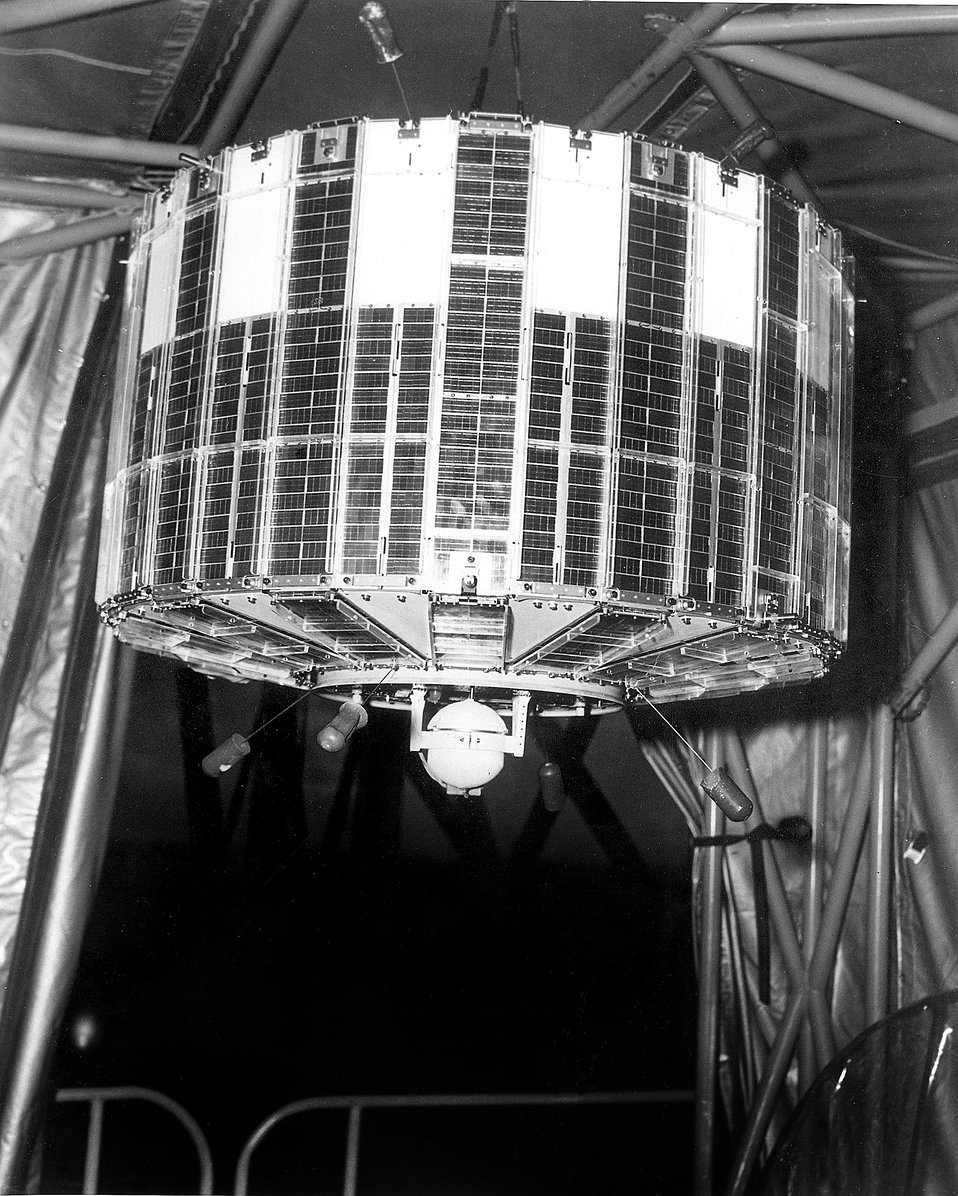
The tiny SNAP atomic is fastened to the base of satellite for vibrations tests at Johns Hopkins' Applied Physics Laboratory, Howard County, MD.